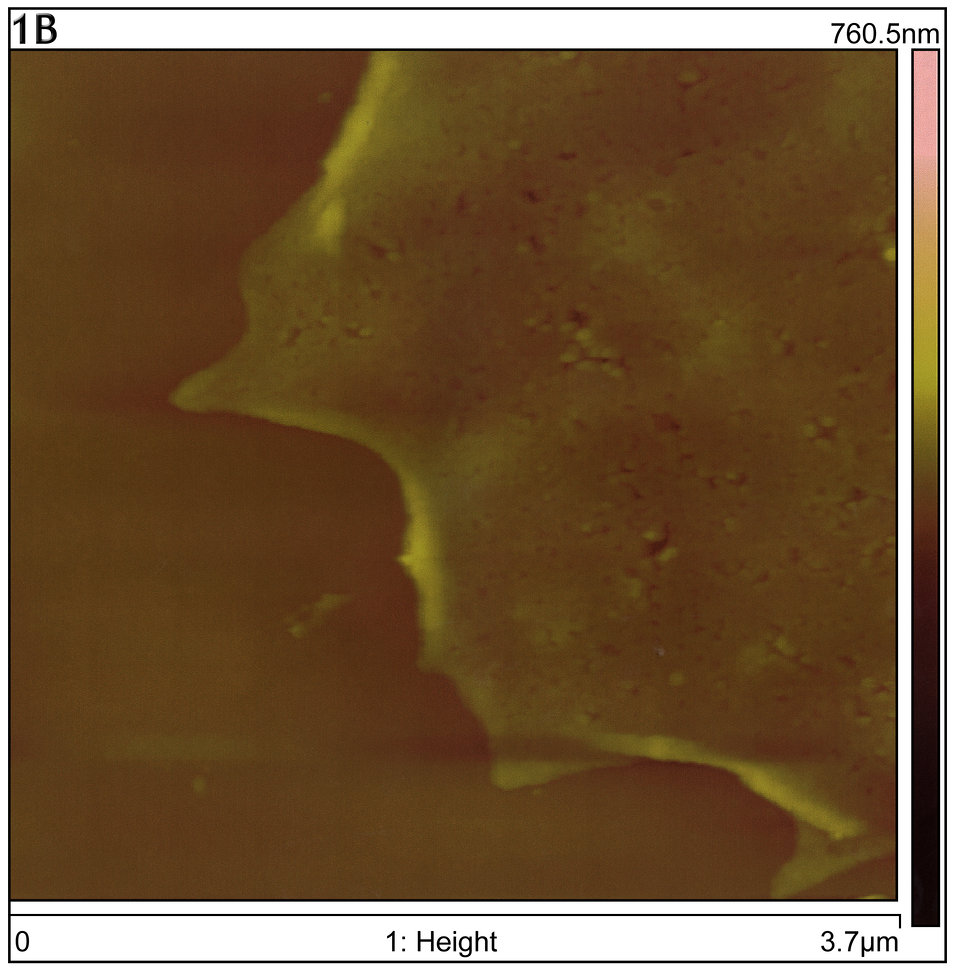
This atomic force micrograph reveals how uninfected Vero E6 cells looked relatively flat with minimal surface morphology.